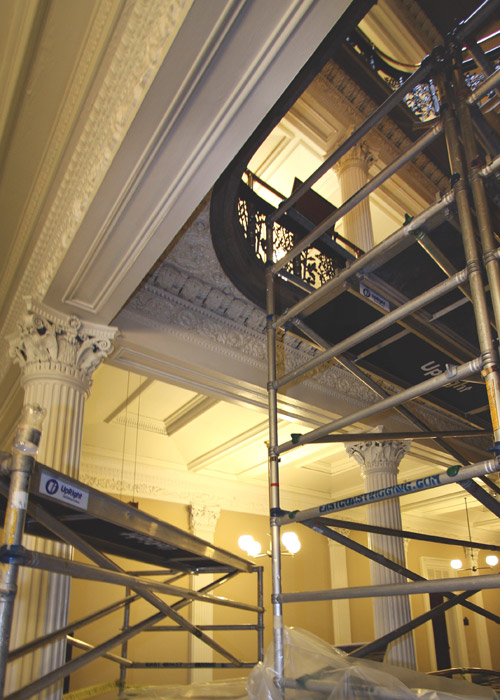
west-stairs-scaffolding

Scaffolding to take measurements and make molds of missing features is installed inside one of the West Wing staircases.